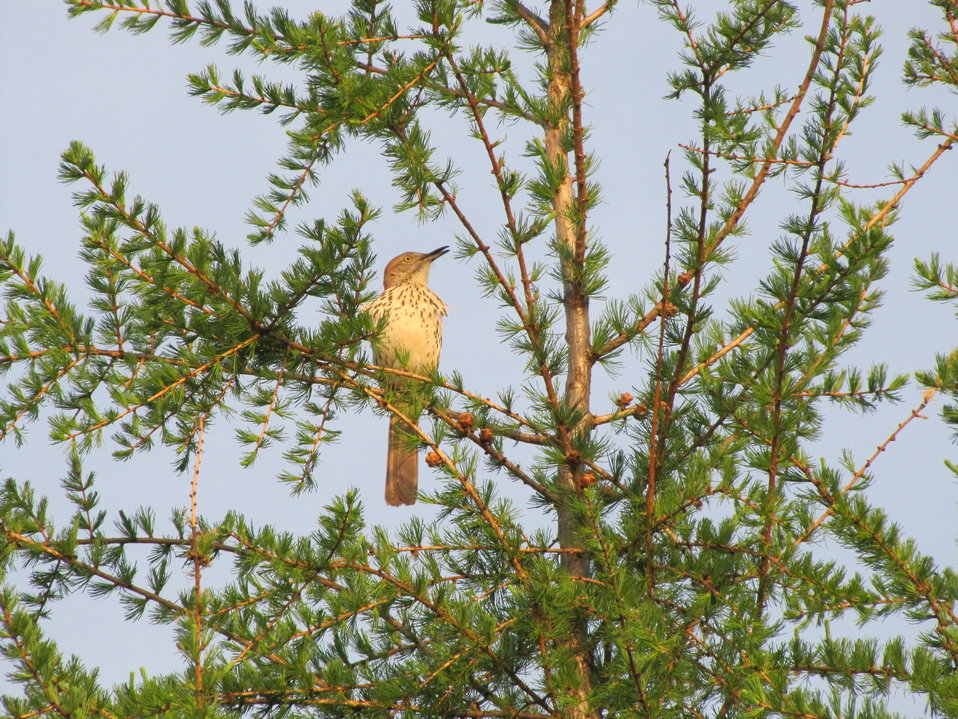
Brown thrasher at Holland Ditch on the north side of Pine Creek Road.